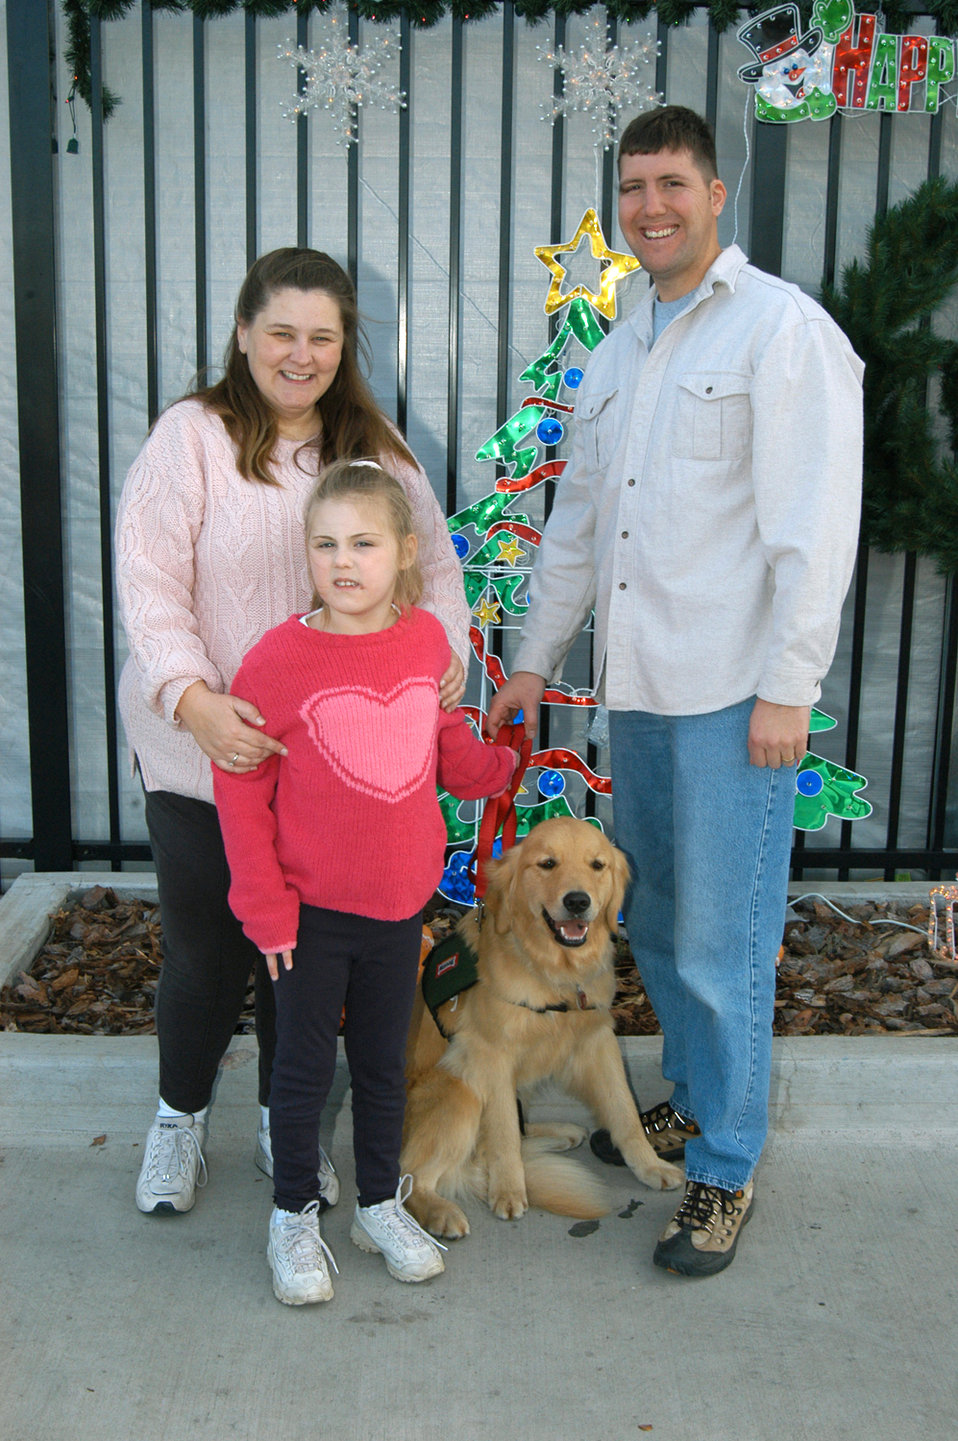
Golden retriever 'finds' girl to help

SCHRIEVER AIR FORCE BASE, Colo. -- The Rizzo family poses with Berkley.